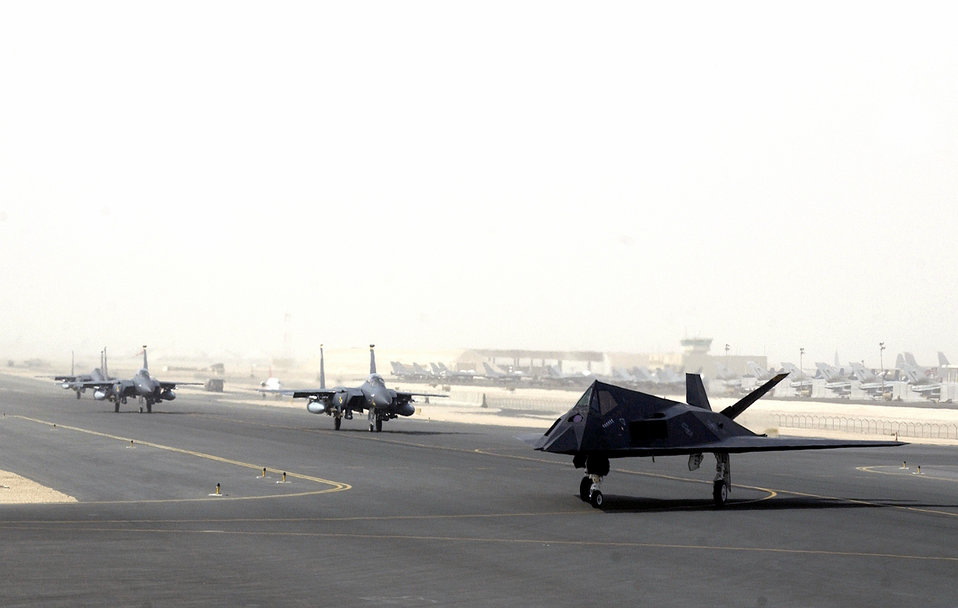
Prepare to strike

OPERATION IRAQI FREEDOM -- An F-117 from the 8th Expeditionary Fighter Squadron out of Holloman A.F.B., NM, followed by F-15s from Seymour Johnson Air Force Base, N.C., prepare to launch from a forward-deployed air base in the Middle East on April 14, 2003. The 8th EFS has begun returning to Hollomann A.F.B. after having been deployed to the Middle East in support of Operation Iraqi Freedom.